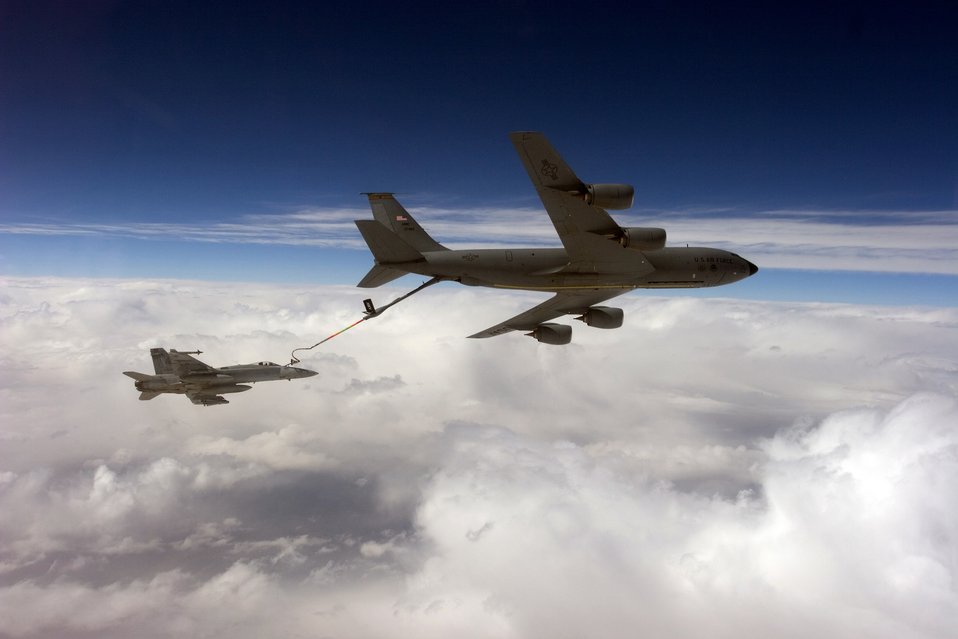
Joint effort

OVER THE PERSIAN GULF -- An F/A-18C Hornet receives fuel from an Air Force KC-135 Stratotanker during a combat mission here April 20.